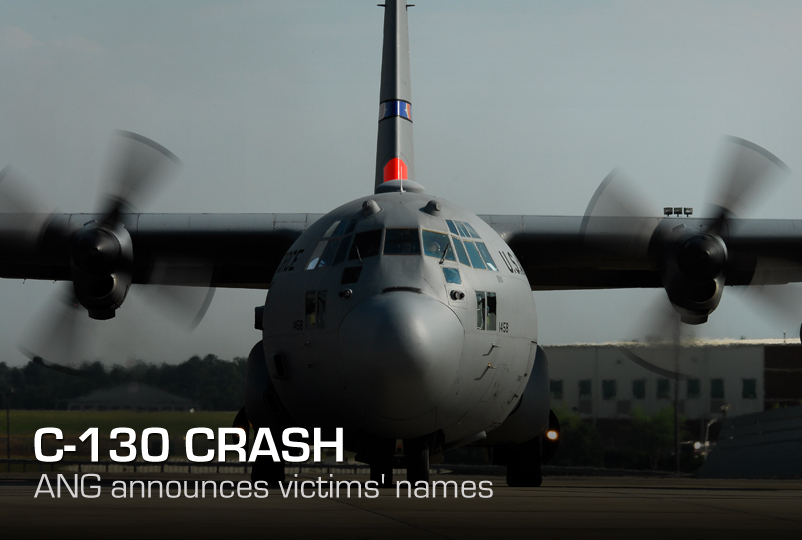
C-130 CRASH